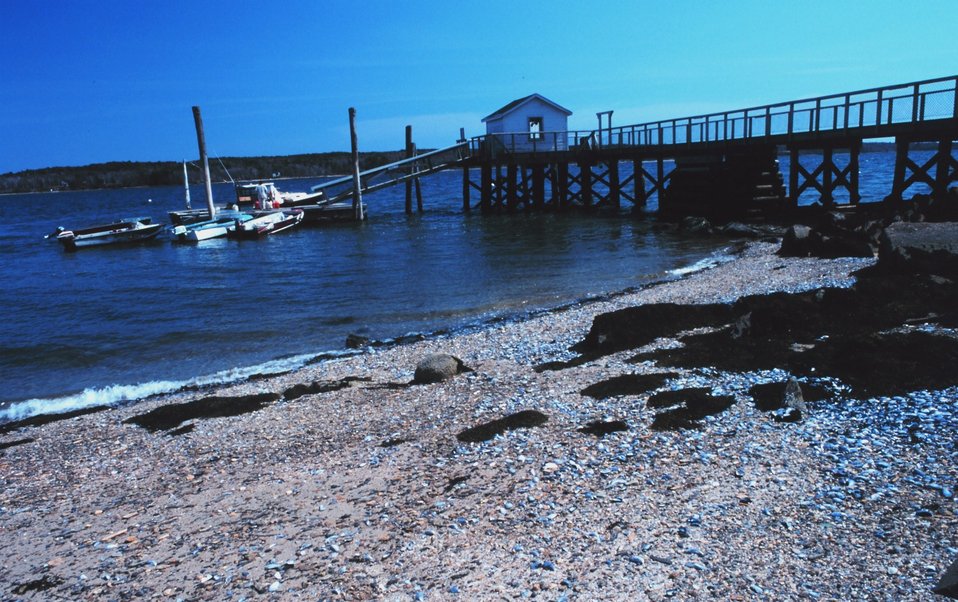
The fishermen's pier